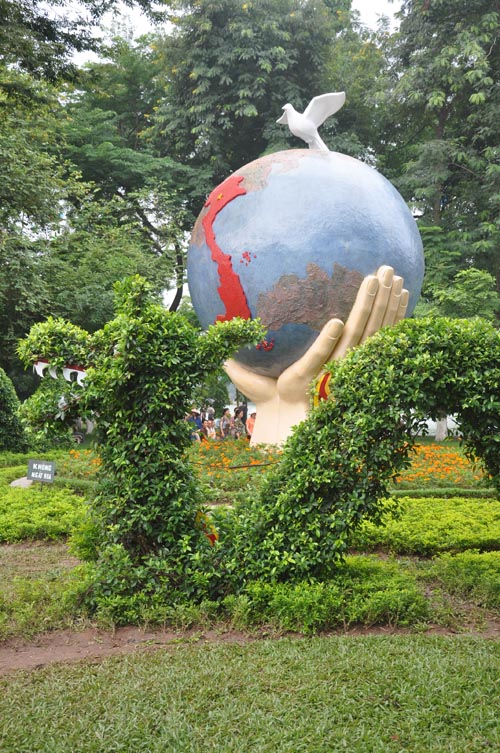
Hanoi celebrates 1,000 years as capital of Vietnam.